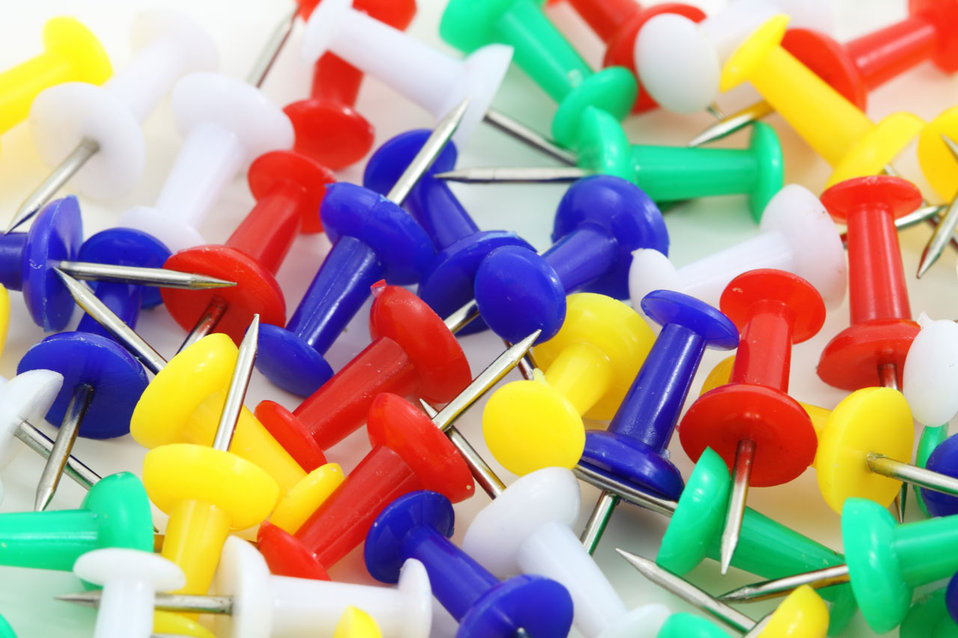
Push pins

Colorful push pins.